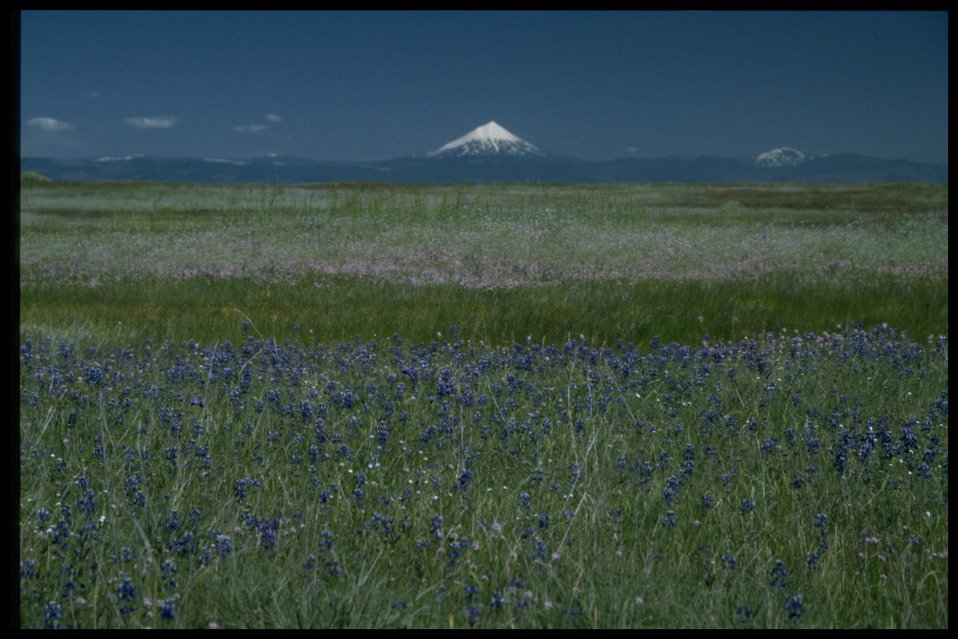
Scenic view of Mt. McLoughlin, Plectris congesta, Lupinus bicolor.